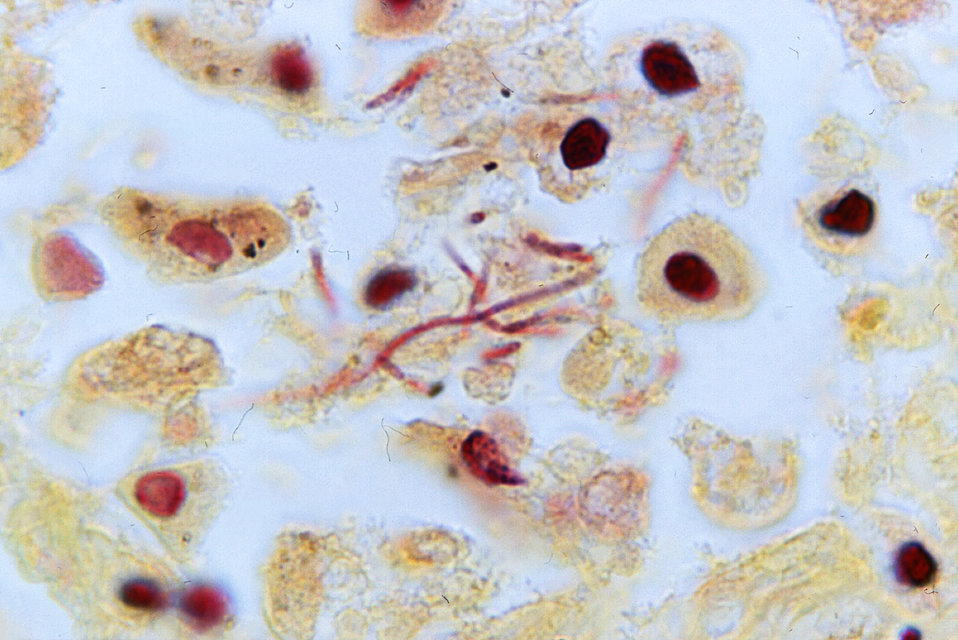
Under a high magnification of 1200X, this Brown and Brenn-stained lung tissue sample revealed the histopathologic changes indicative of what was diagnosed as a case of fatal human plague from the country of Nepal.